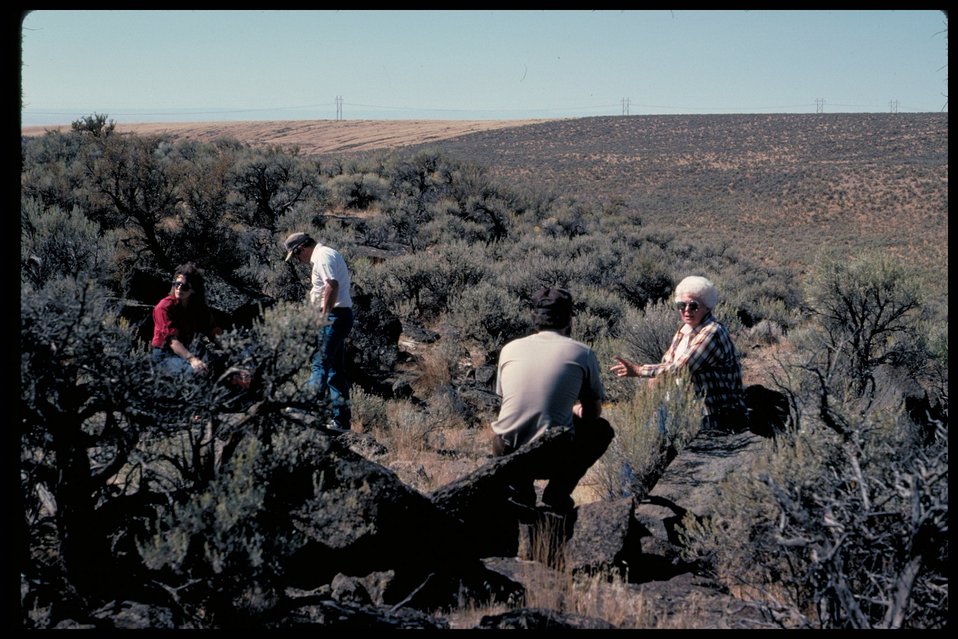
Oregon Trail near Alkali Creek Lower Snake River District